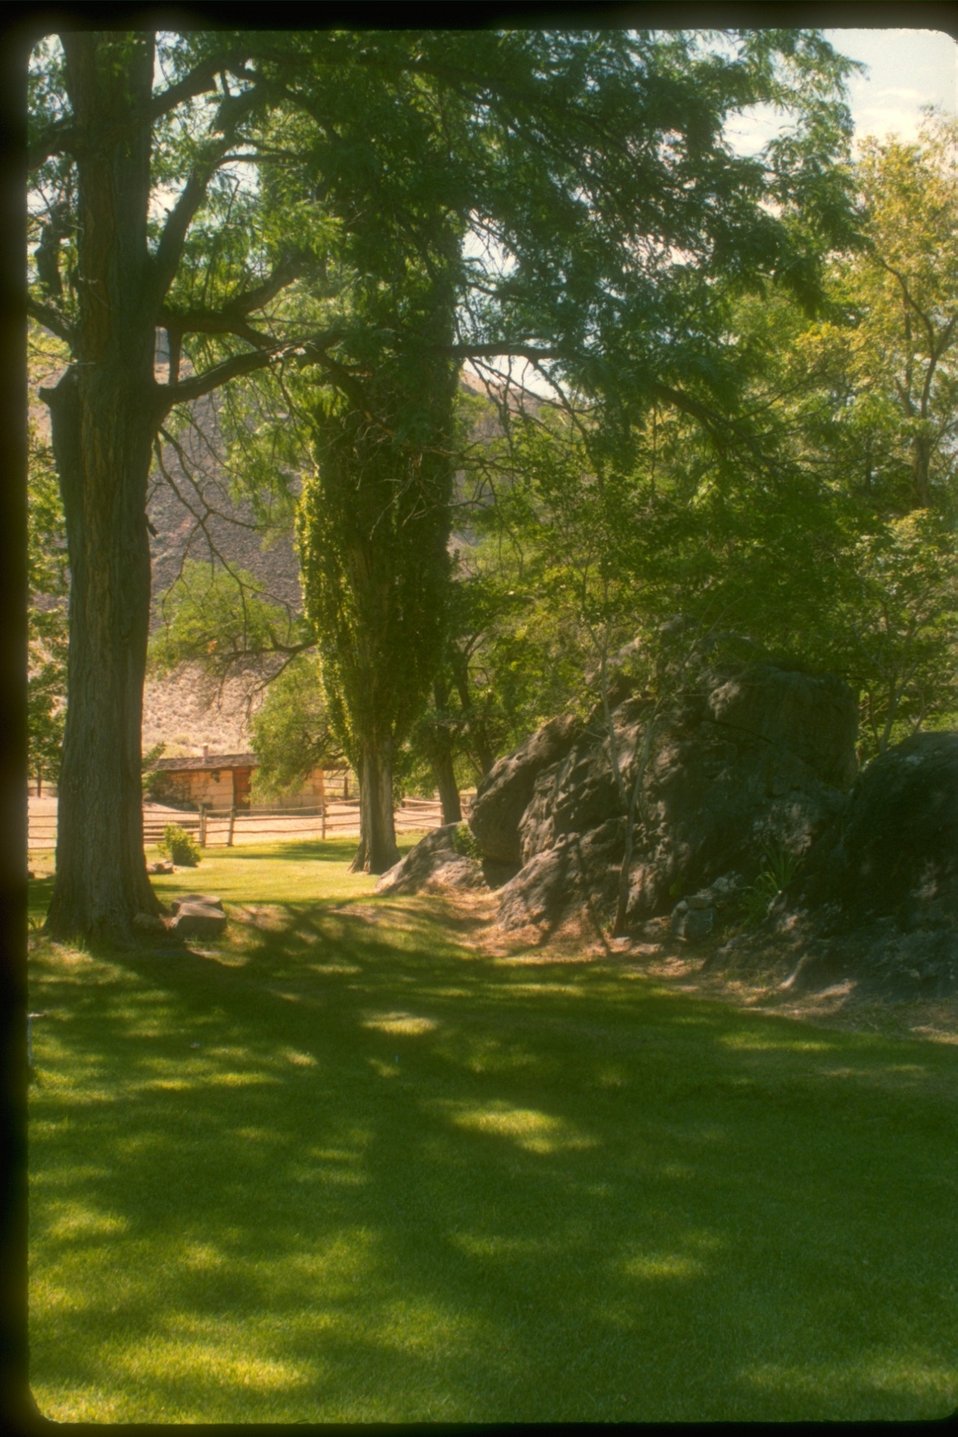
Birch Creek Historical Ranch area.